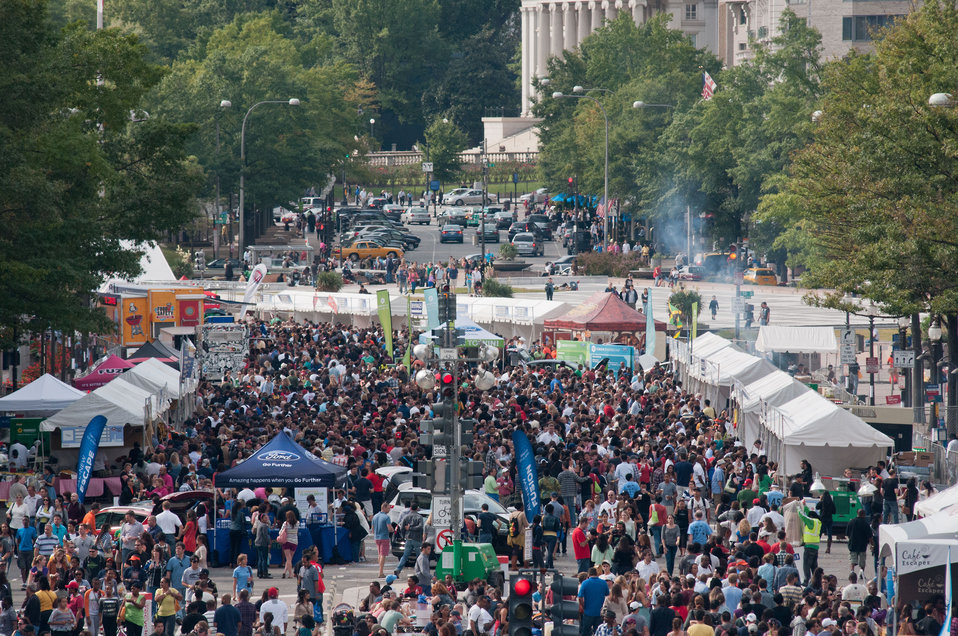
The Taste of D.C., event highlights more than 70 eateries, 30 specialty beer providers, the United Service Organization (USO) Metropolitan Washington, and live bands. It is anticipated that more than 500,000 people will attend over the course of the three-day event, which extends from the White House to the Capitol, along Pennsylvania Ave. in Washington D.C. on Saturday, October 6, 2012. Agriculture Food Safety and Inspection Service specialists present talks and cooking demonstrations. Agriculture’s mobile Discovery Zone is on hand to educate children and parents about the four main principals of food safety – clean, separate, cook and chill.